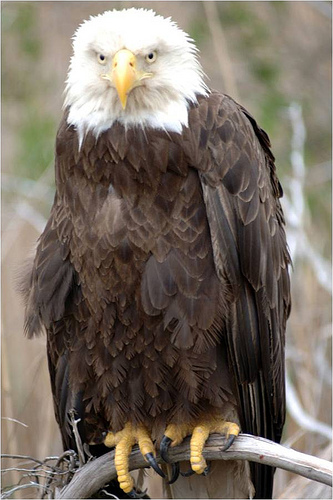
Bald eagle.